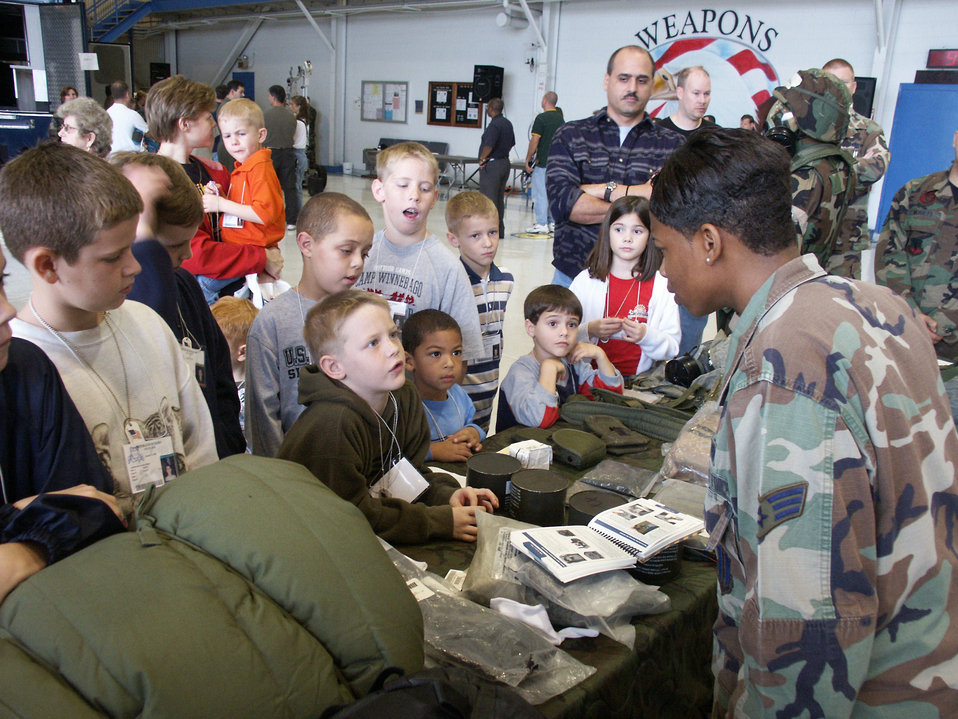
Operation Hero 'deploys' Airmen's children

EGLIN AIR FORCE BASE, Fla. -- Senior Airman Tierra Cope explains mobility bags to some of the children who attended Operation Hero here Jan. 8. The event was designed to help children better understand what a deployment is and what happens when their parents deploy. Airman Cope is a mobility apprentice in the 33rd Maintenance Operations Squadron.